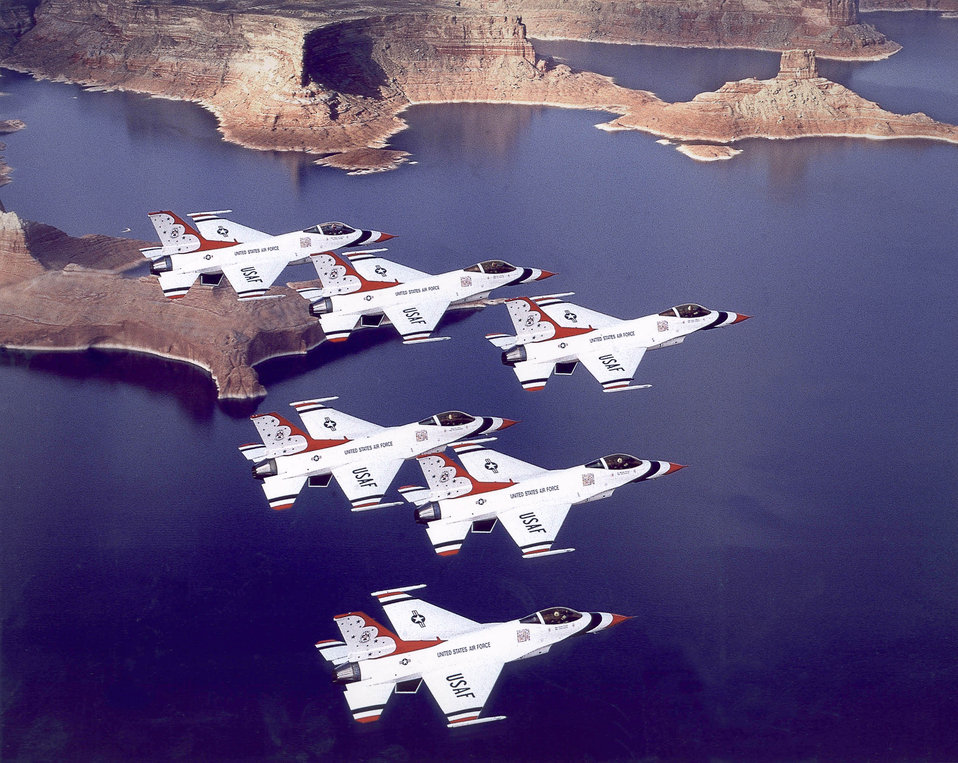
U.S. Air Force Thunderbirds

1980's -- U.S. Air Force Thunderbirds. General Dynamics F-16A Fighting Falcon. The Thunderbirds transitioned from T-38s to F-16s in 1982.